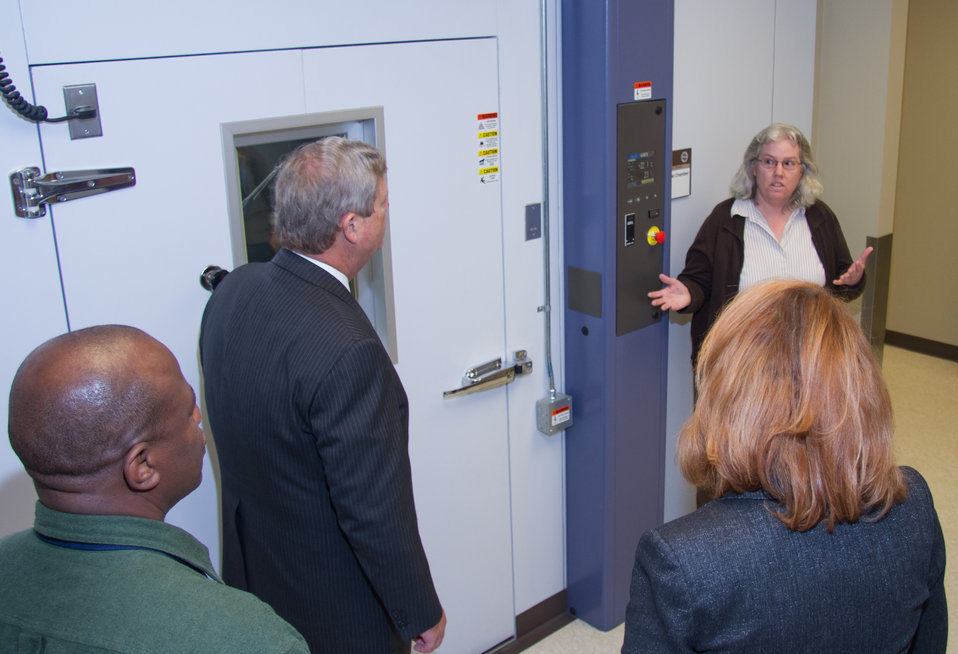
Cathleen Brenner, Acting Chief of Grain Inspection, Packers and Stockyards Administration (GIPSA), Inspection Instrumentation Branch, explains to Agriculture Secretary Tom Vilsack GIPSA's role in supporting the commercial grain inspection system through the National Conference on Weights and Measures' National Type Evaluation Program in Kansas City, MO, on Wednesday, Oct. 23, 2013.